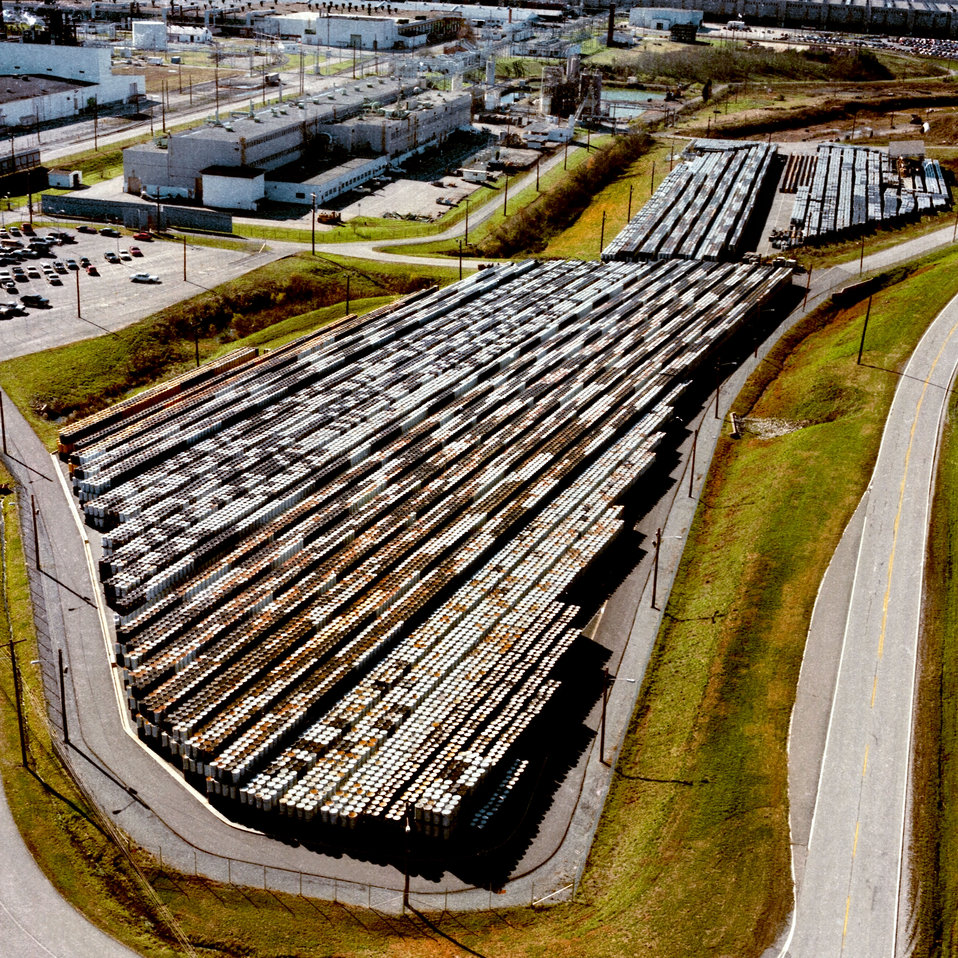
Aerial of storage pad with drums K-25 Oak Ridge

89-1121 DOE photo by Frank Hoffman Aerial of storage pad with drums K-25 Plant Oak Ridge Tennessee 11-9-1989